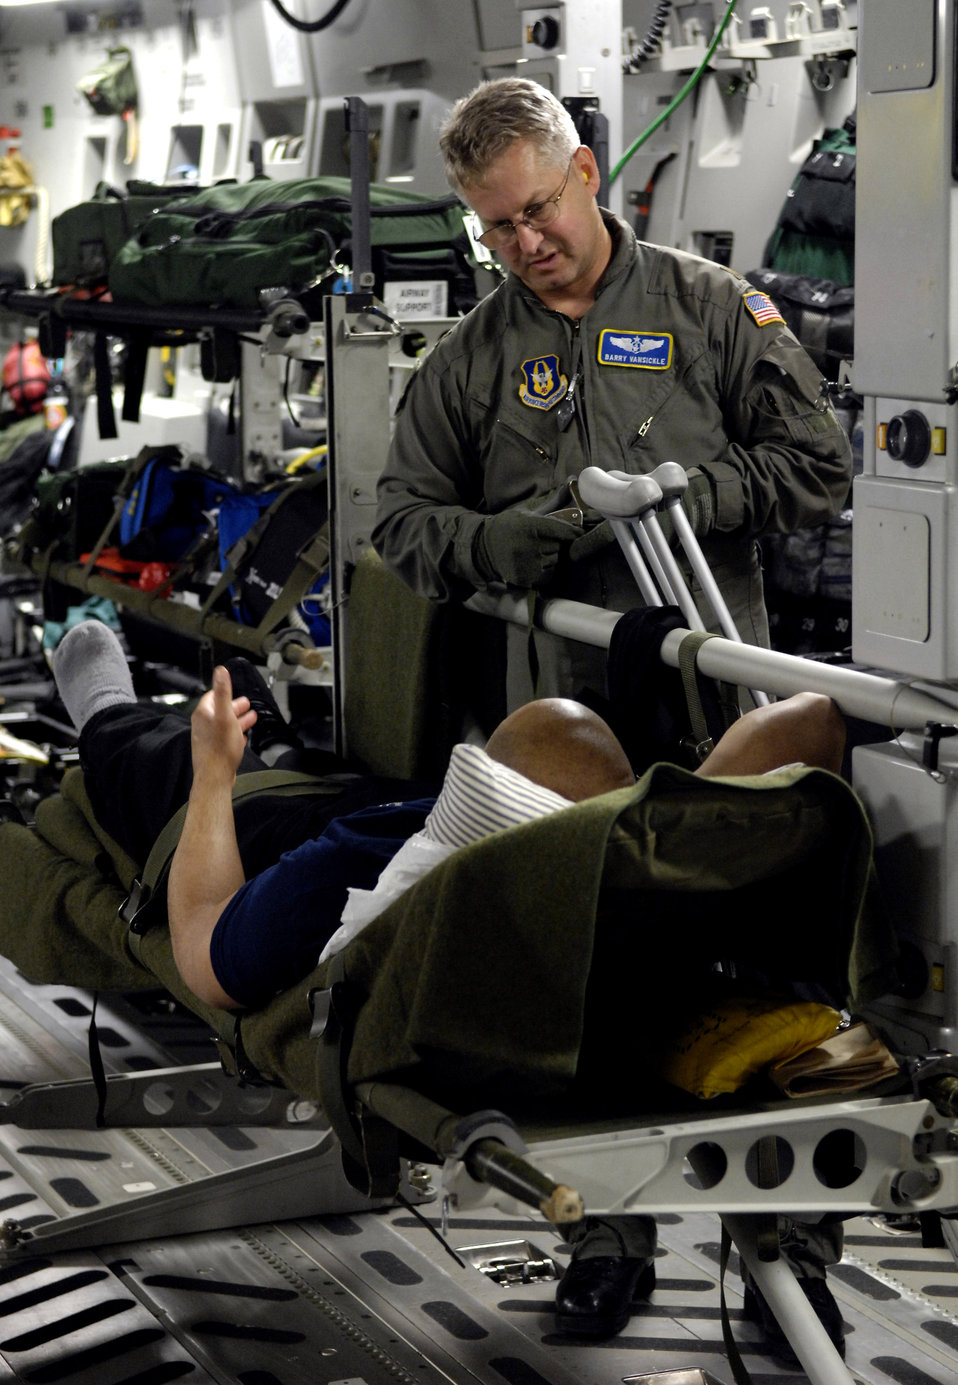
McChord C-17 crew flies medevac mission out of Antarctica

Maj. Barry Vansickle talks to a patient on board a C-17 Globemaster III medical evacuation flight Aug. 28 from Antarctica. Major Vansickle is assigned to the 446th Aeromedical Evacuation Squadron from McChord Air Force Base, Wash. The medical evacuation mission was flown for a patient who required more definitive medical treatment than can be handled in Antarctica.